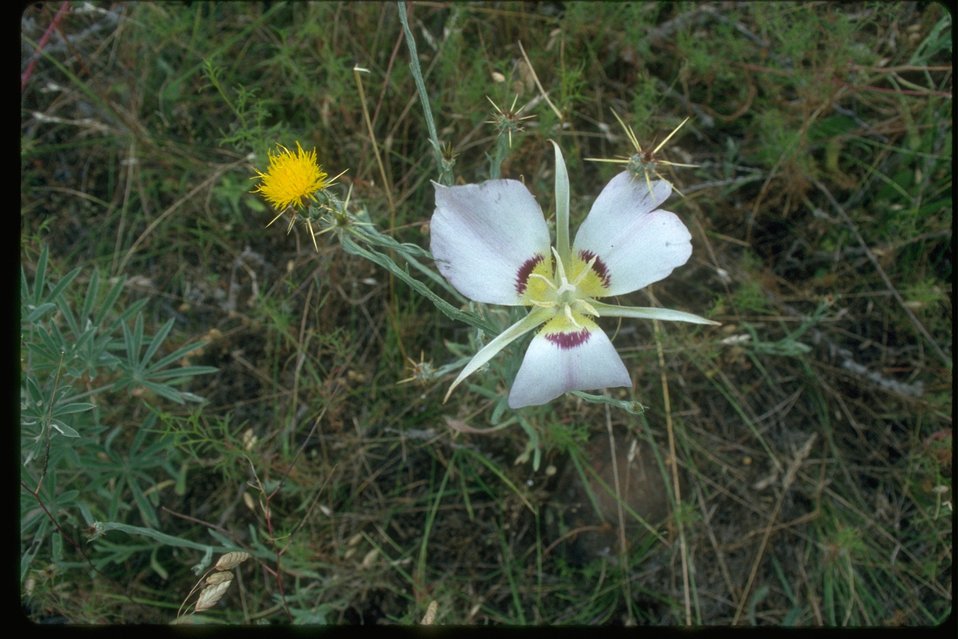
Rare Calachortus found in Hells Canyon with habitat under attack from yellow starthistle in the Garden Creek Preserve in Idaho.